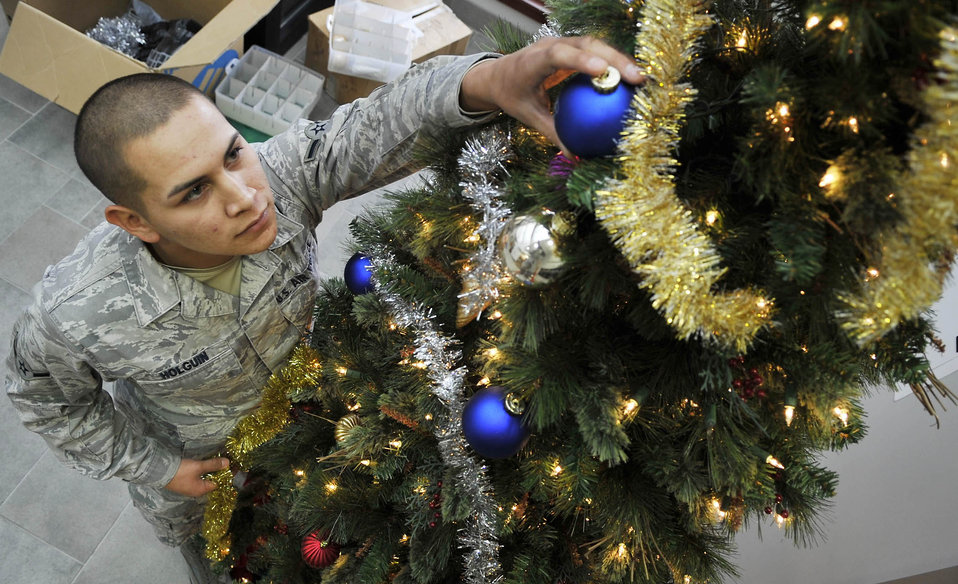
The perfect spot

Airman Marc Holguin puts ornaments on a Christmas tree Dec. 8, 2010, at Buckley Air Force Base, Colo. Many of the base's units are getting into the holiday celebration. Airman Holguin is assigned to the 460th Space Communications Squadron.